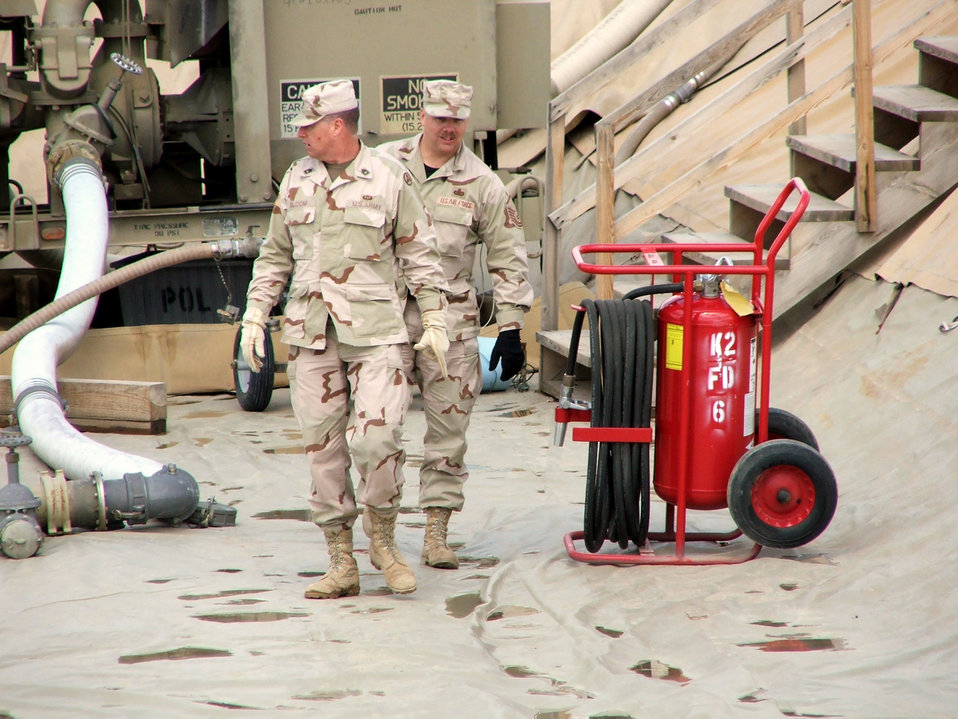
Joint fuels effort allows OEF airlift to keep rolling in Uzbekistan

KARSHI-KHANABAD, Uzbekistan -- Army Sgt. 1st Class Gustave Bloom tours the fuel storage area here with his Air Force counterpart Master Sgt. Scott Ross. Sergeant Ross is the 416th Expeditionary Mission Support Squadron's fuels management flight superintendent, and Sergeant Bloom is the fuels accountability officer for Logistics Task Force 191 here.